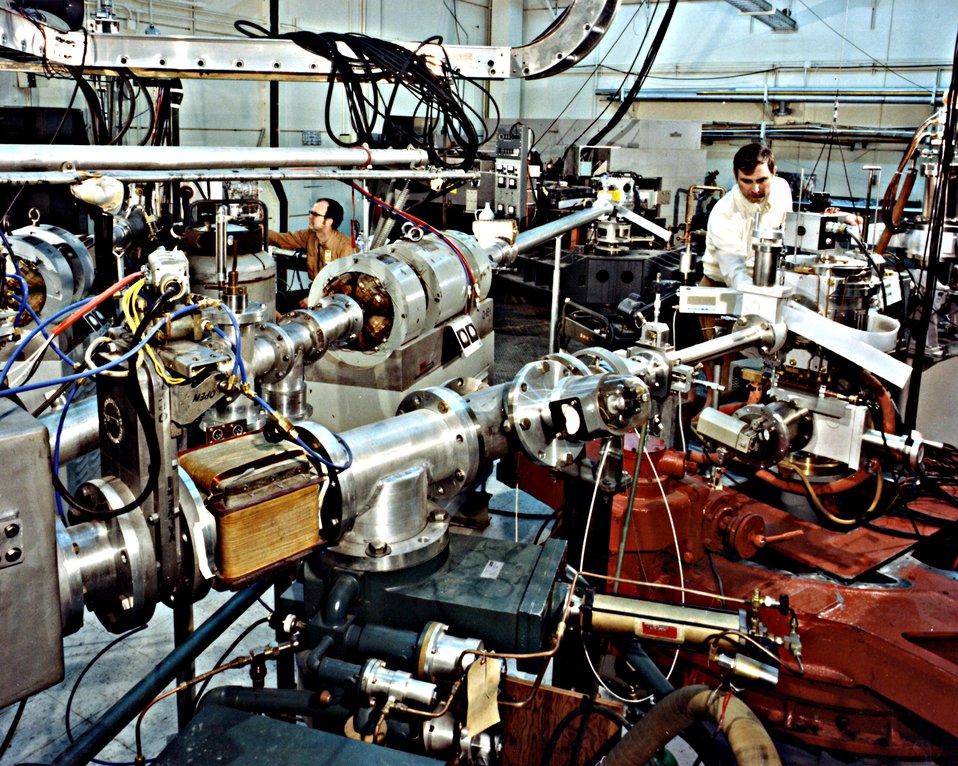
THE LARGE EXPERIMENT ROOM AT THE OAK RIDGE ISOCHRONOUS CYCLOTRON (ORIC).

THIS PARTICLE ACCELERATOR IS OPERATED BY THE PHYSICS DIV- ISION OF THE ORNL AND IS USED TO ACCELERATE PROTONS, DEUTERONS, ALPHA PARTICLES, AND HEAVIER IONS (UP TO CHLORINE) FOR STUDIES OF NUCLEAR REACTIONS AND NUCLEAR STRUCTURE. WITH THE ADDITION IN LATE 1979 OF A 25 MILLION VOLT TANDEM ELECTROSTATIC ACCELERATOR AS PART OF THE NEW HOLIFIED HEAVY ION RESEARCH FACILITY, ORIC WILL BE CAPABLE OF ACCELERATING PARTICLES UP TO THE MASS RANGE OF 150 (RARE-EARTHS) TO PRODUCE REACTIONS WITH URANIUM TARGET NUCLEI. SHOWN ARE THREE BEAM LINES WITH TARGET STATION - SCATTERING CHAMBERS. THE CENTER LINE INCLUDES A BROAD- RANGE MASS SPECTROGRPH FOR ANALYSIS OF REACTION PRODUCTS. EXPERIMENTERS CAN BE SEEN IN THE PROCESS OF ADJUSTING RAD- IATION DETECTORS IN THE VICINITY OF THEIR RESPECTIVE SCATTERING CHAMBERS.